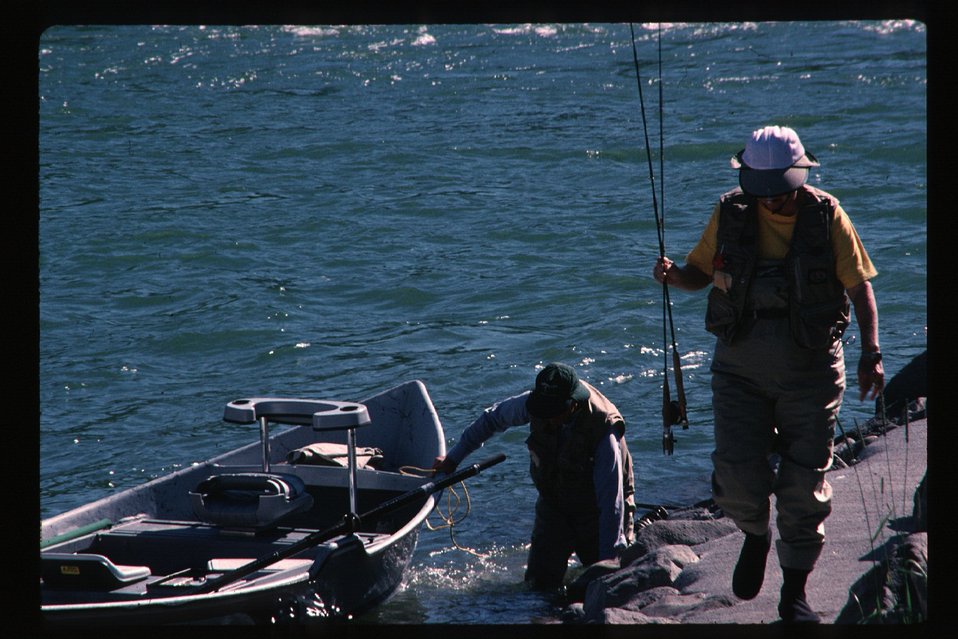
Fishing South Fork of Snake River Idaho Falls Field Office USRD Upper Snake River District